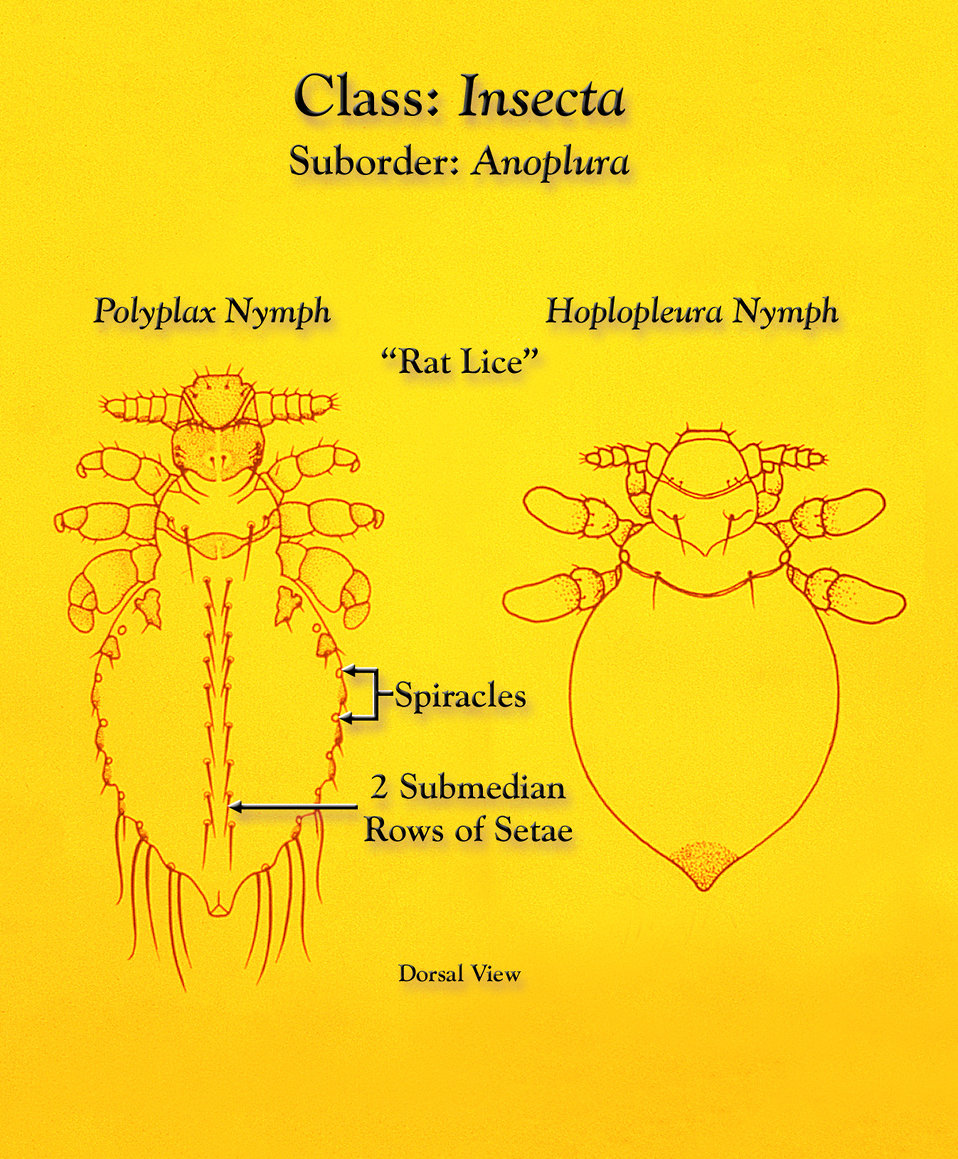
This illustration depicts the morphologic characteristics found to be displayed by Anopleural sucking lice members of the genera Polyplax and Hoplopleura during their nymphal stages.